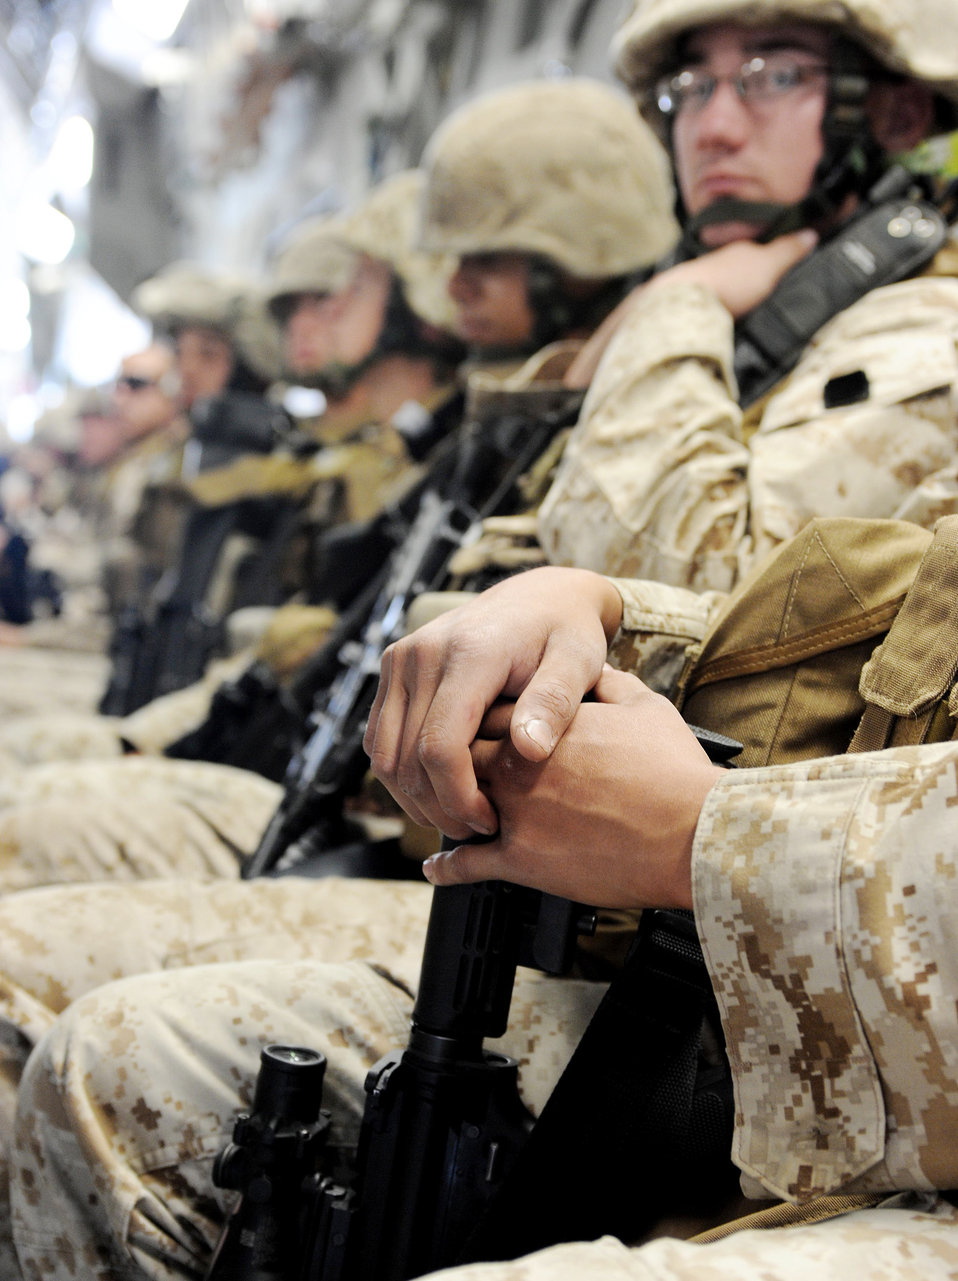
Manas Airmen move troops into Afghanistan

Marines sit on a C-17 Globemaster III en route to Afghanistan April 2, 2010 at the Transit Center at Manas, Kyrgyzstan. Thousands of Marines, Soldiers, Airmen and coalition troops transit through here each month in support of Operation Enduring Freedom. In March, 376th Expeditionary Logistics Readiness Squadron Airmen pushed through 50,000 multinational, U.S. and coalition troops. The Marines are from the 7th Engineer Support Battalion, Marine Corps Base Camp Pendleton, Calif.